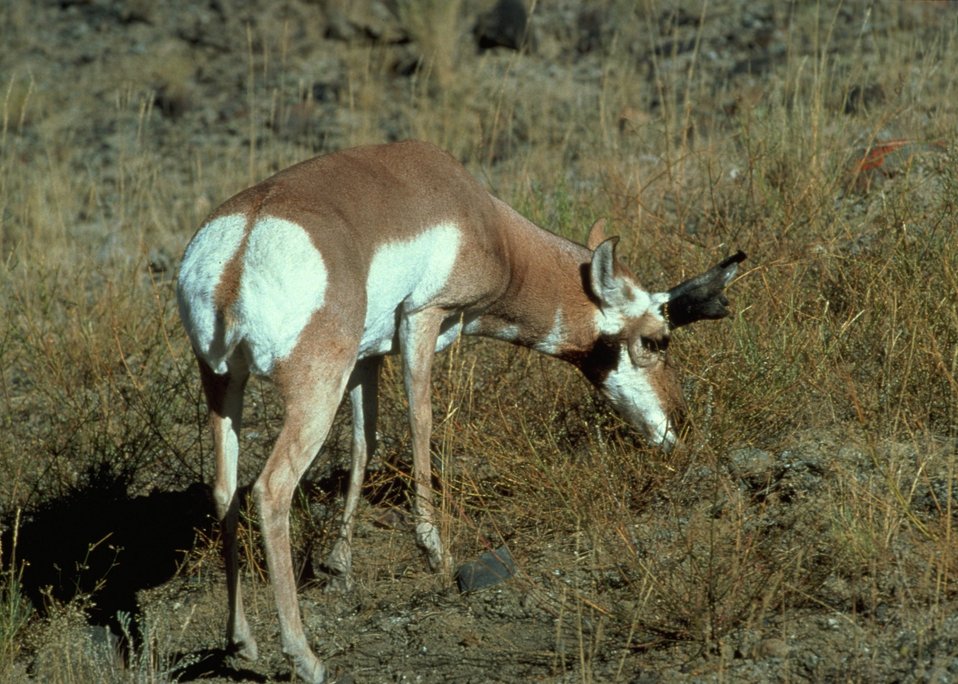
A grazing antelope.